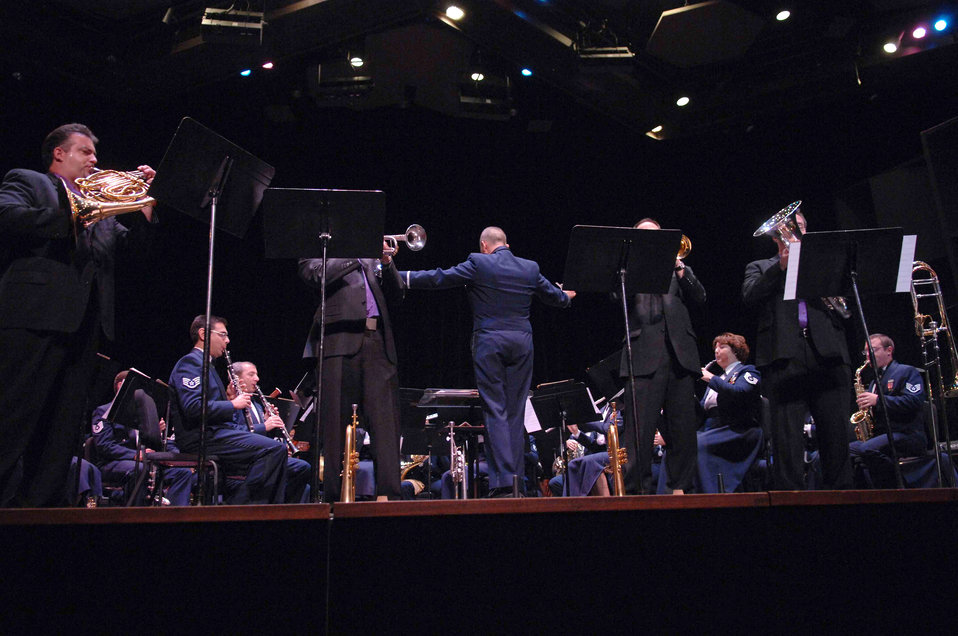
Music to their ears

Members of the Boston Brass perform alongside the Air Force Band of the Golden West during an Oct. 17 performance at the University of Nevada Las Vegas. The Band of the Golden West, from Travis Air Force Base, Calif., is the only active duty Air Force band west of the Rocky Mountains. They are scheduled to perform five free concerts in the Las Vegas community. The band supports 10 active duty Air Force bases, five Air Force Reserve wings and five recruiting squadrons in California, Washington, Oregon, Idaho and Nevada with more than 500 annual performances.